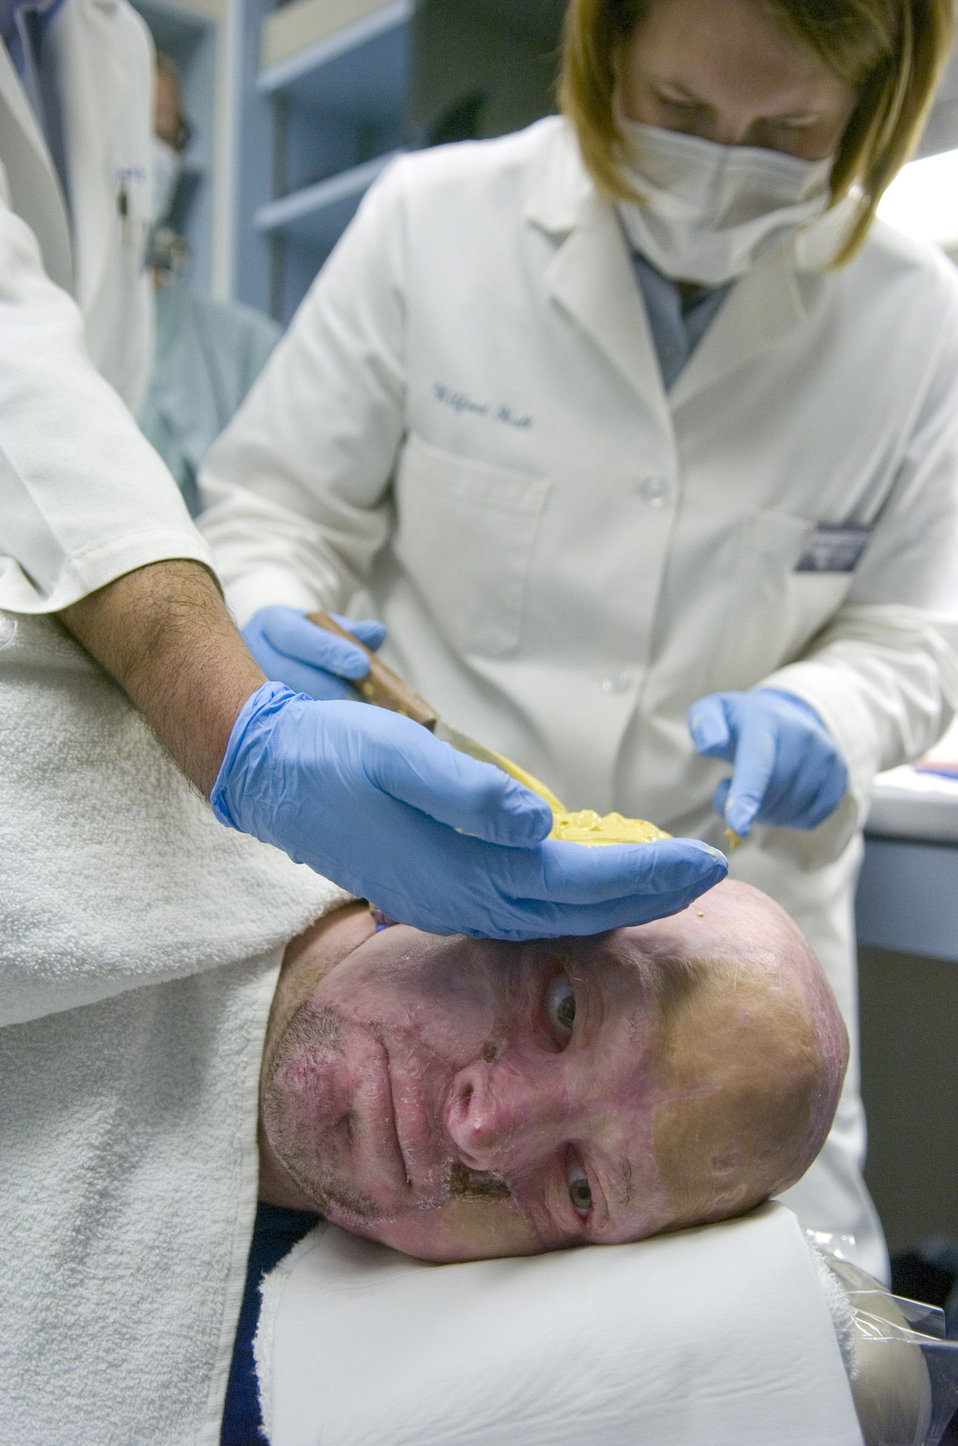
Wounded warrior receives new ears

Capt. (Dr.) Angela Stanton (right) and Col. (Dr.) Joe Villalobos (left) create a 3-D model resin prosthesis mold for Marine Capt. Ryan Voltin at the McGowan Dental Clinic Sept. 29 at Lackland Air Force Base, Texas. Captain Voltin, an AH-1 Cobra pilot, lost his ears when his helicopter erupted in flames during a training accident in May 2007. Dr. Stanton and Dr. Villalobos are fellow maxillofacial prosthodontists assigned to the 59th Medical Wing.